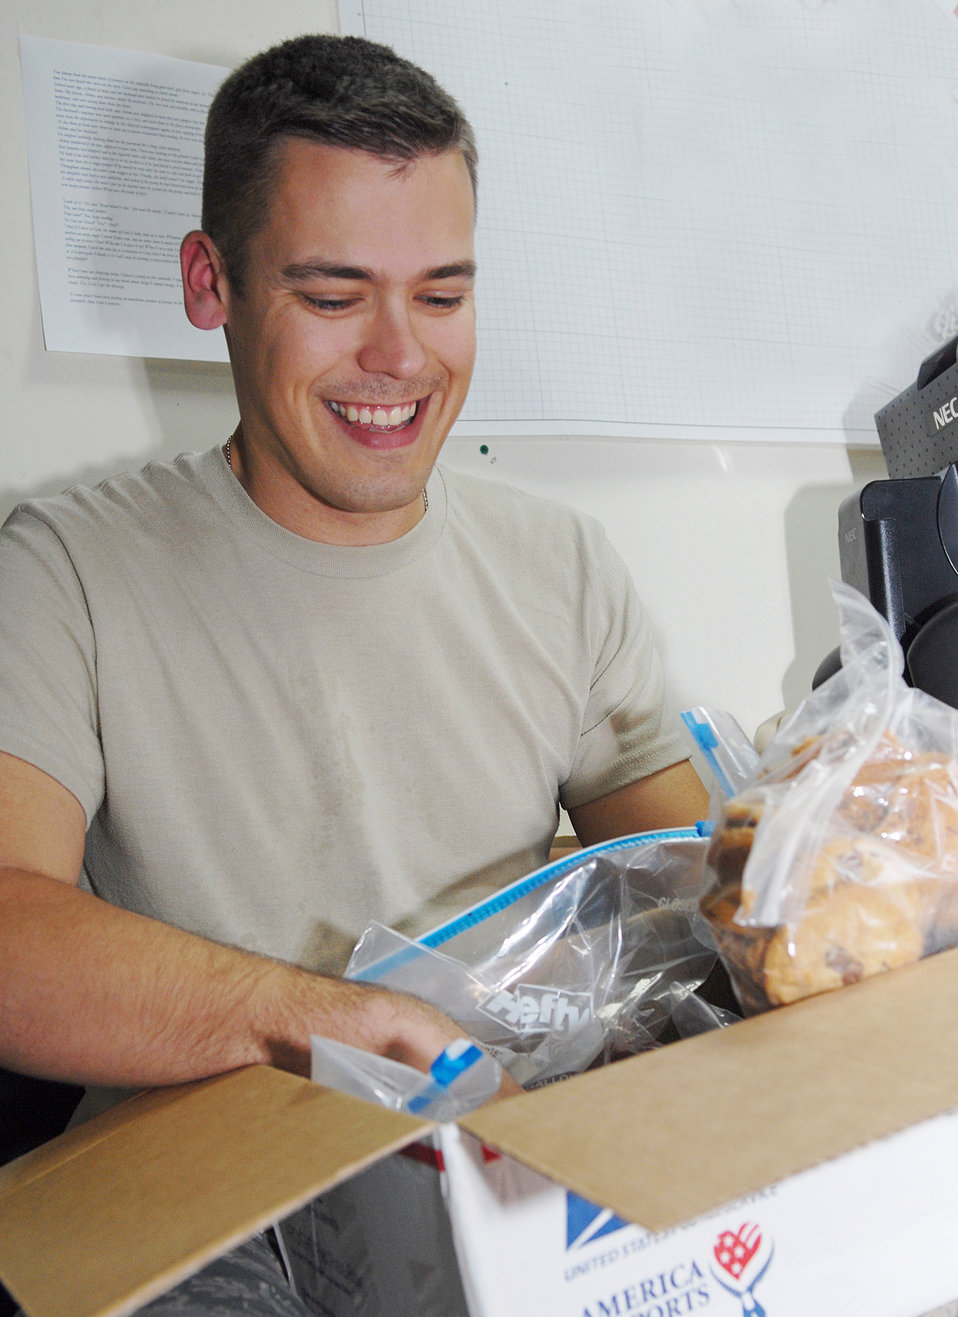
Air Force amputee returns to Southwest Asia, spends holidays in AOR

SOUTHWEST ASIA -- Tech. Sgt. Christopher Ramakka, flight chief from the 380th Expeditionary Civil Engineer Explosive Ordnance Flight, opens a care package from his wife, Sonja, and daughters, Mackenzie, 12, and Daphne, 2, in the EOD office here Dec. 24. The Richland, Wash., native is serving his debut deployment after losing his lower left leg when he stepped on a mine in Afghanistan three years ago. He also lost the tips of two fingers and suffered further damage to his hands and right leg. Sergeant Ramakka is depoyed from Lackland Air Force Base, Texas.